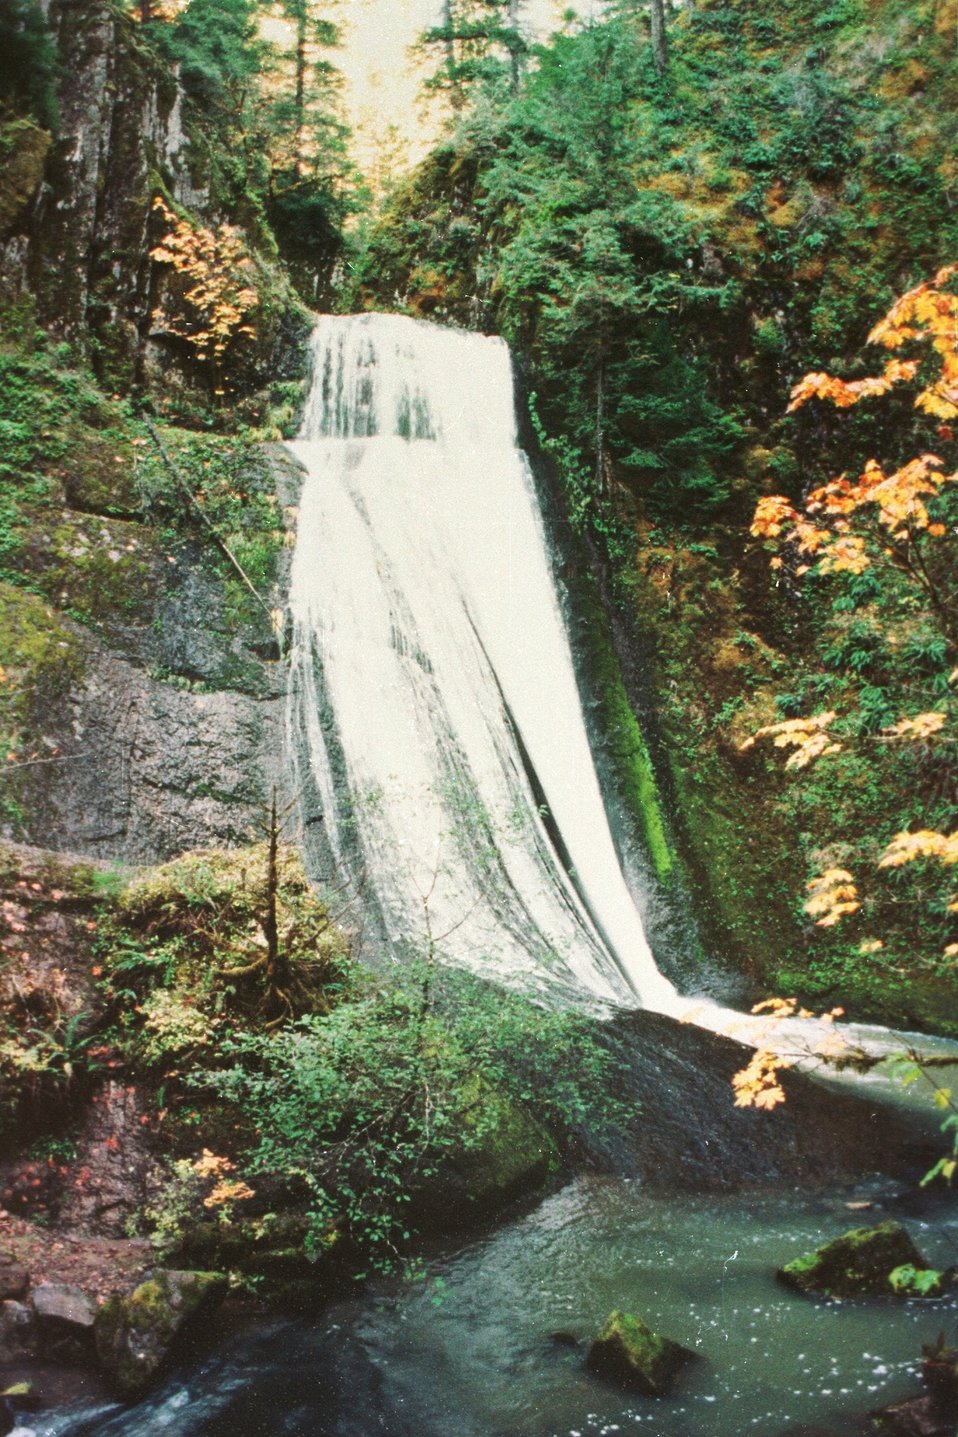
Upper Wolf Creek Falls (Mid-Flow level).